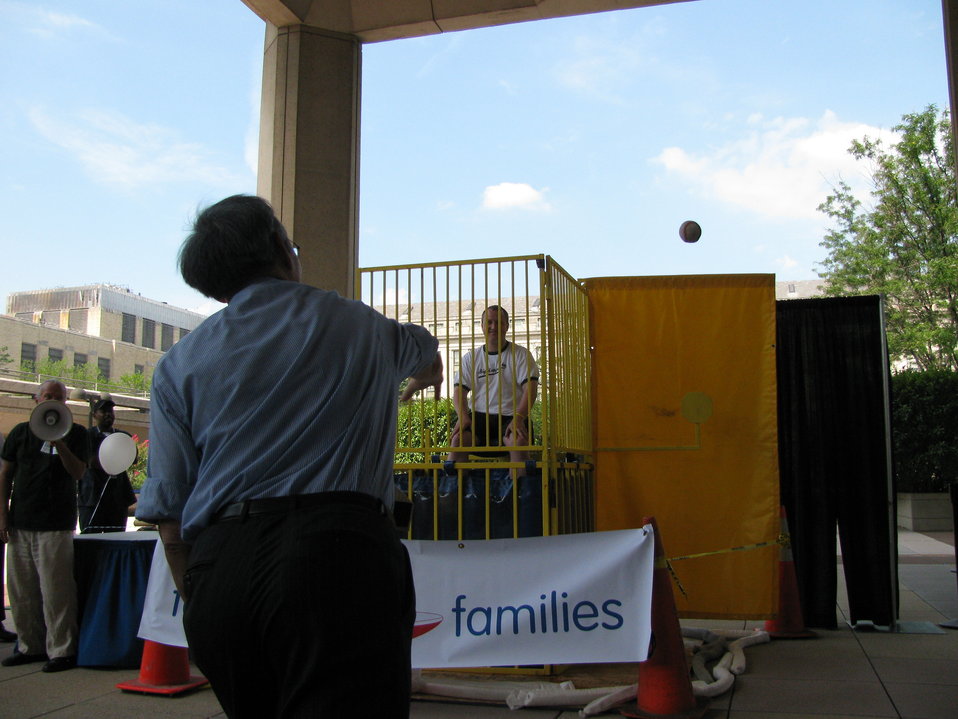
Director of Public Affairs Dan Leistikow being dunked by Sec. Chu